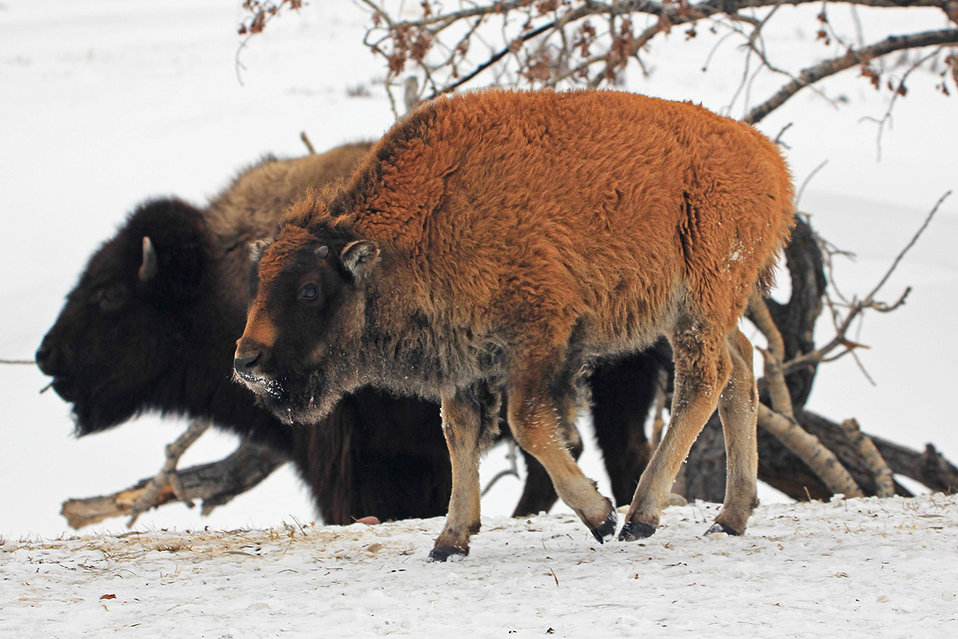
A Late Birthday

A bison calf still retains its reddish color in February, indicating it was born much later than the traditional spring calving season.

Credit: USFWS / Ann Hough, National Elk Refuge volunteer